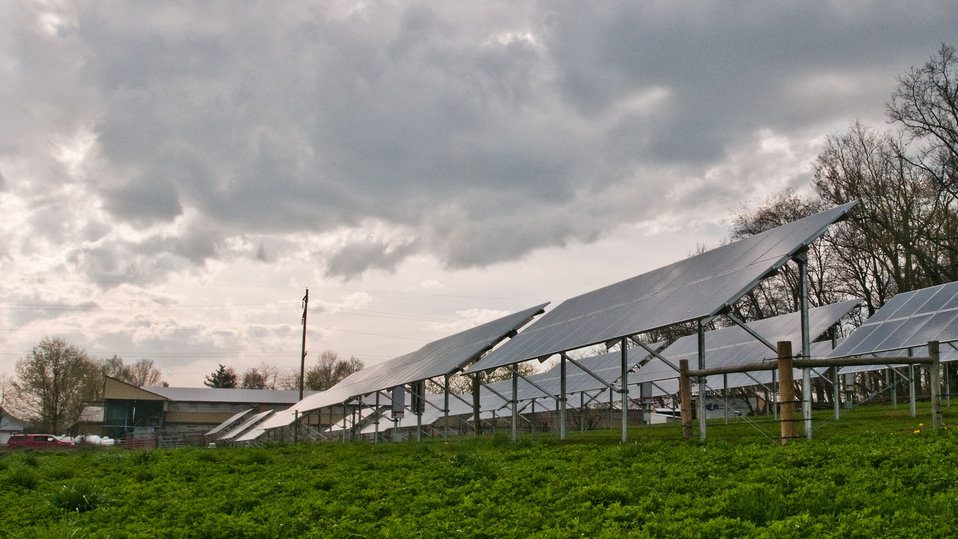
Some of the 240 solar panels at Seldom Rest Farms located, north of Myerstown, PA, on Wednesday, April 20, 2011. The farm raises crops, sheep and 17,000 hens. The Hens are kept in a two story chicken house and produce approximately 2.5 million chicks each year. To supplement their electrical needs, they chose a contractor who knew about United States Department of Agriculture (USDA) Rural Energy for America program (REAP) grants and helped them through the application process. The farm was awarded a $152,000 grant (25% of the cost). to install the 1001kW solar array to power their farm, a neighboring farm and homes on the local electrical grid. The 240 solar panels were ground mounted with 5-foot clearance underneath to allow sheep to graze and rest underneath protected from the rain, sun or snowfall. Ten inverters change the DC electrical energy from the panels into AC energy that goes into the local power grid. Spring statistics show it is producing more than expected. REAP offers grants and/or loan guarantees for the purchase and installation of renewable energy generating systems and for energy efficiency improvements.